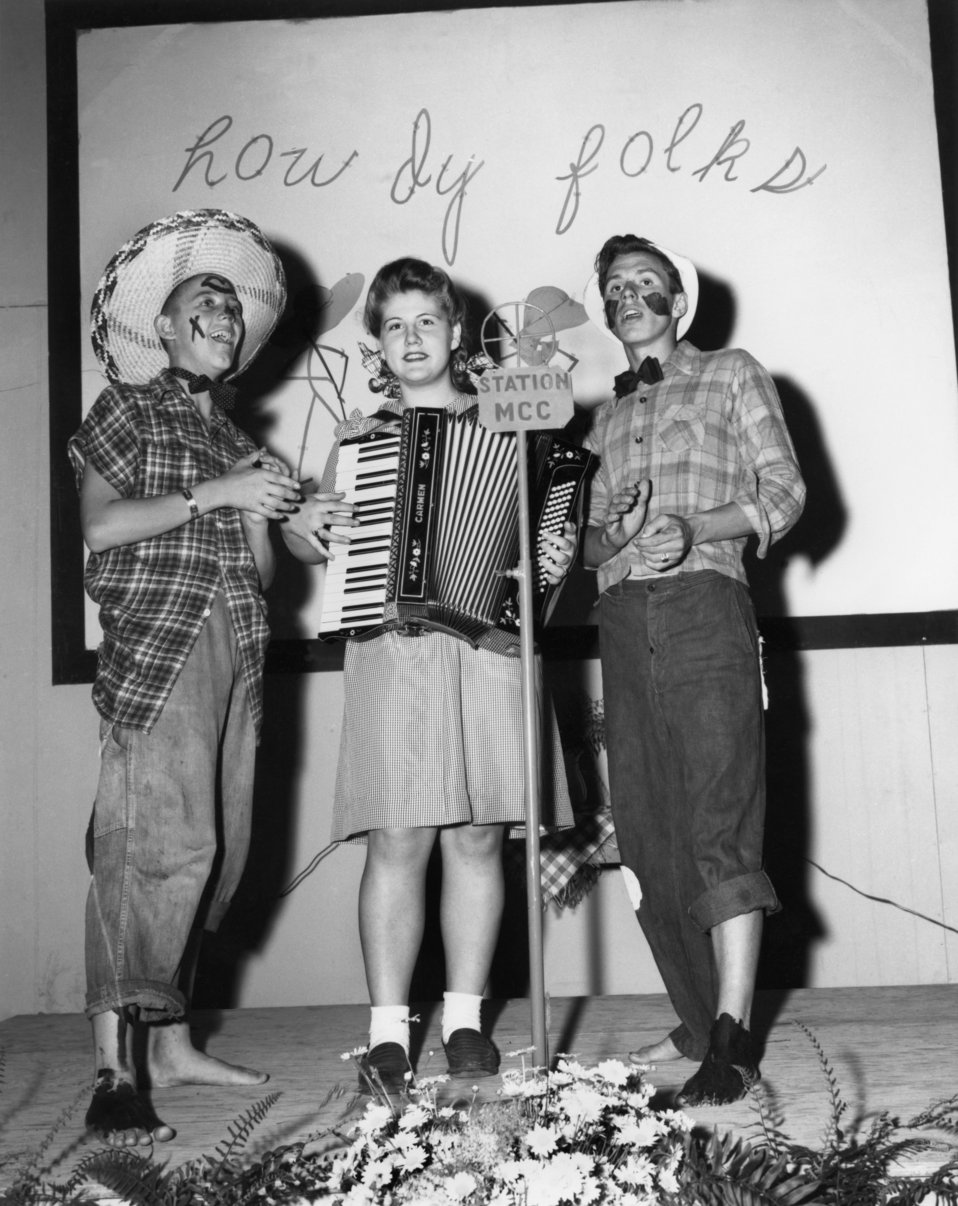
Play at Midtown Community Bldg. Oak Ridge 1945

PRO-624 DOE photo by Ed Westcott 5-26-1945 ' Barn Yard Supper ' Oak Ridge Tennessee